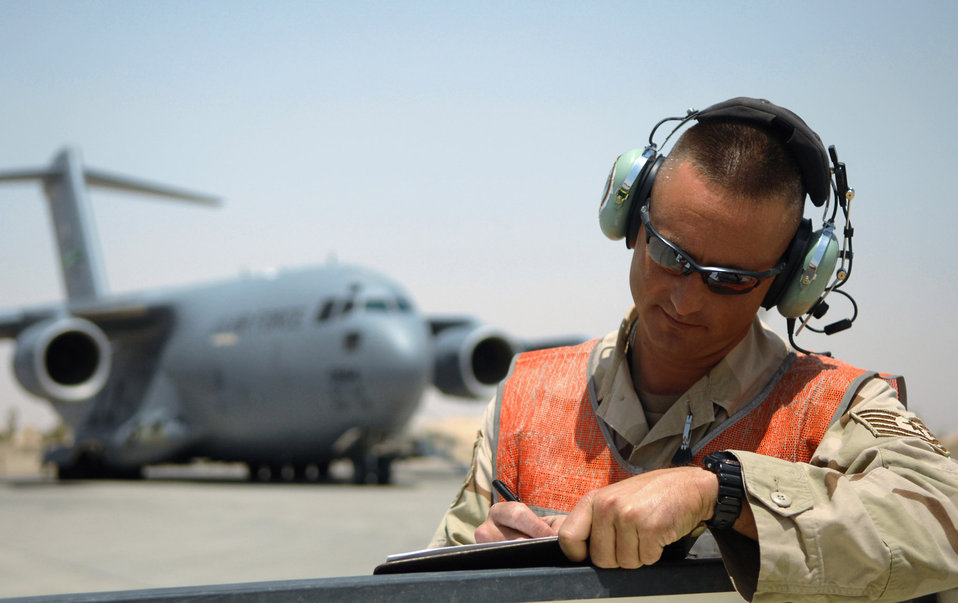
Follow me

Tech. Sgt. Frank Wisnieski annotates the parking plan of incoming aircraft May 12 at Balad Air Base, Iraq. The Airmen assigned to the transient alert shop are responsible for coordinating aircraft parking positions, fulfilling refueling and maintenance needs, and orchestrating passenger transportation to and from aircraft. Sergeant Wisnieski is a 332nd Expeditionary Maintenance Squadron transient alert supervisor deployed from Ramstein Air Base, Germany.